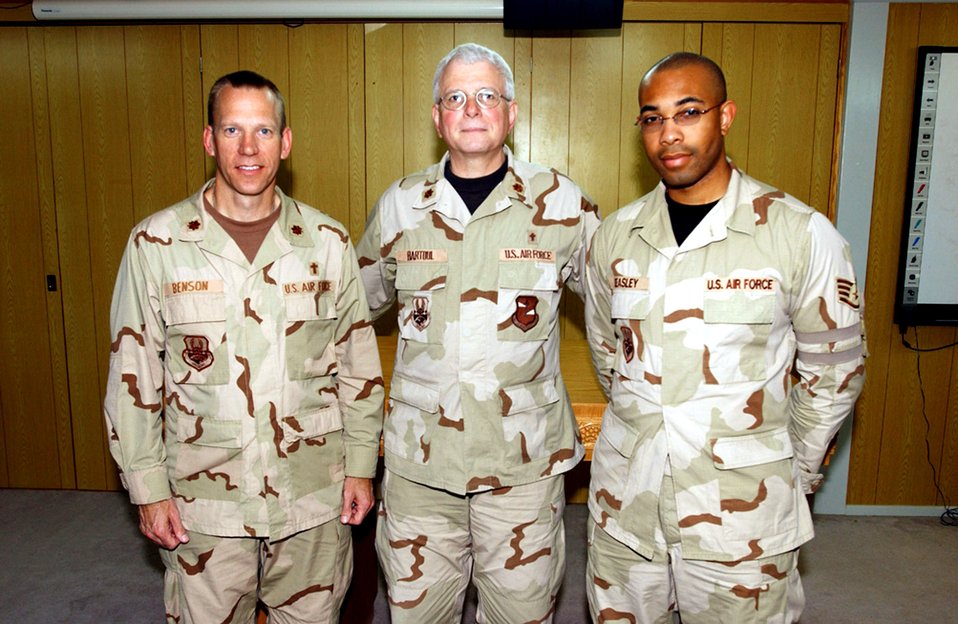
Chaplain team here to serve

(From left) Chaplains (Maj.) Craig Benson and (Maj.) William Bartoul and Staff Sgt. Steven Beasley, chaplain assistant, are the base chapel team for the 380th Air Expeditionary Wing in Southwest Asia.